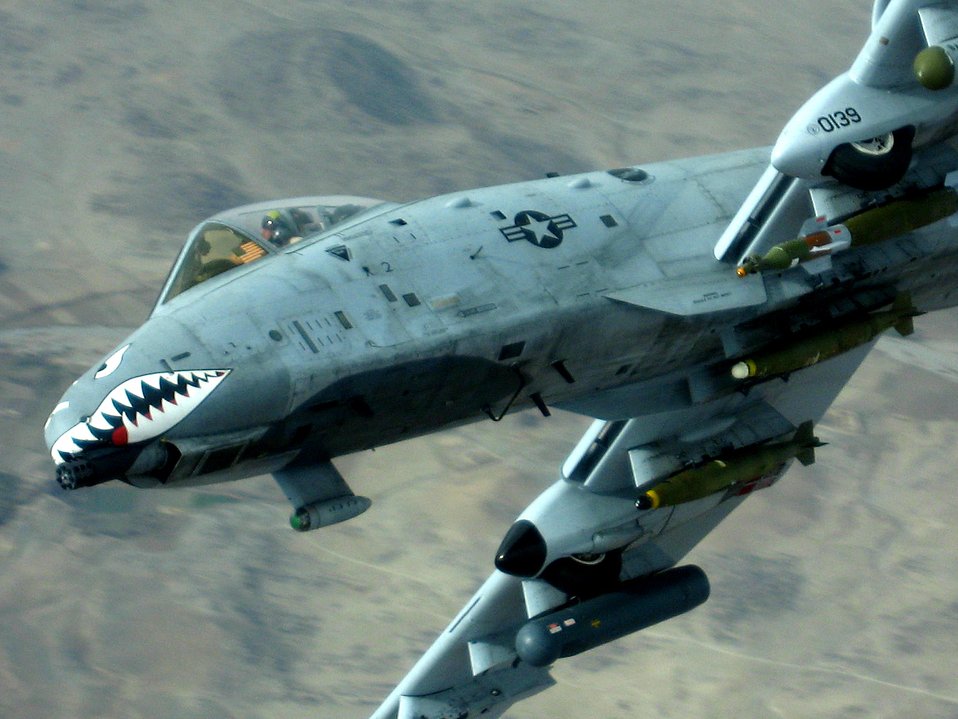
CENTAF Airpower summary for Jan. 22

An A-10 Thunderbolt II, like this one, is among the various U.S. Central Command Air Forces air assets available for providing close-air support for International Security Assistance Force troops in contact with enemy forces in Iraq and Afghanistan. The A-10 is specially designed for close air support of ground forces and can be used against all ground targets, including tanks and other armored vehicles.